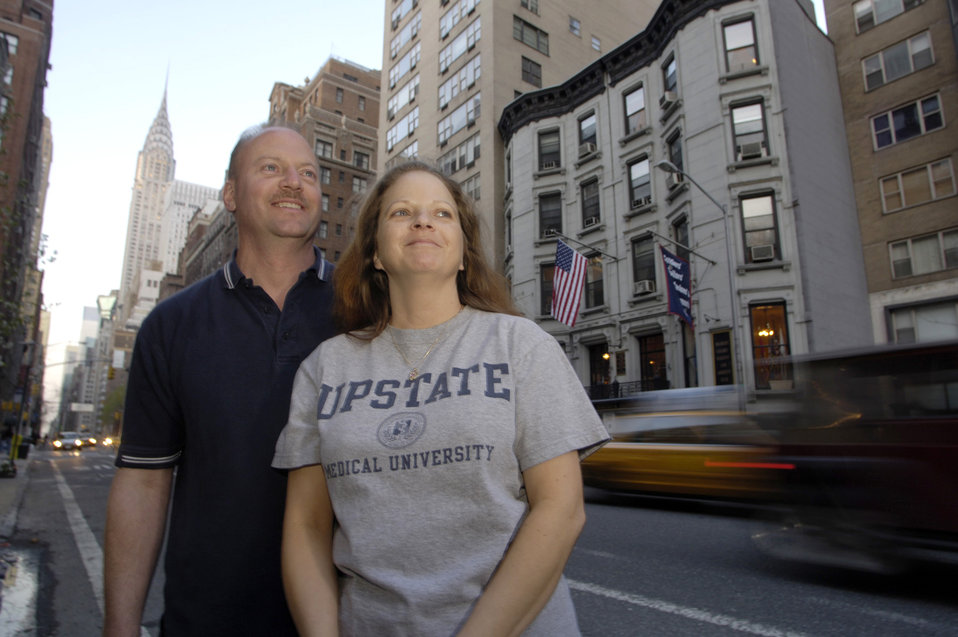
Manhattan's cheapest lodging for 'Those Who Serve'

Master Sgt. Brad Dillon and his wife, Connie, were in Manhattan to see their daughter perform at a local museum. The couple stayed at the Soldiers', Sailors', Marines' and Airmen's Club, which is the building in the background with the flags. Sergeant Dillon is a recruiter based in Syracuse, N.Y.